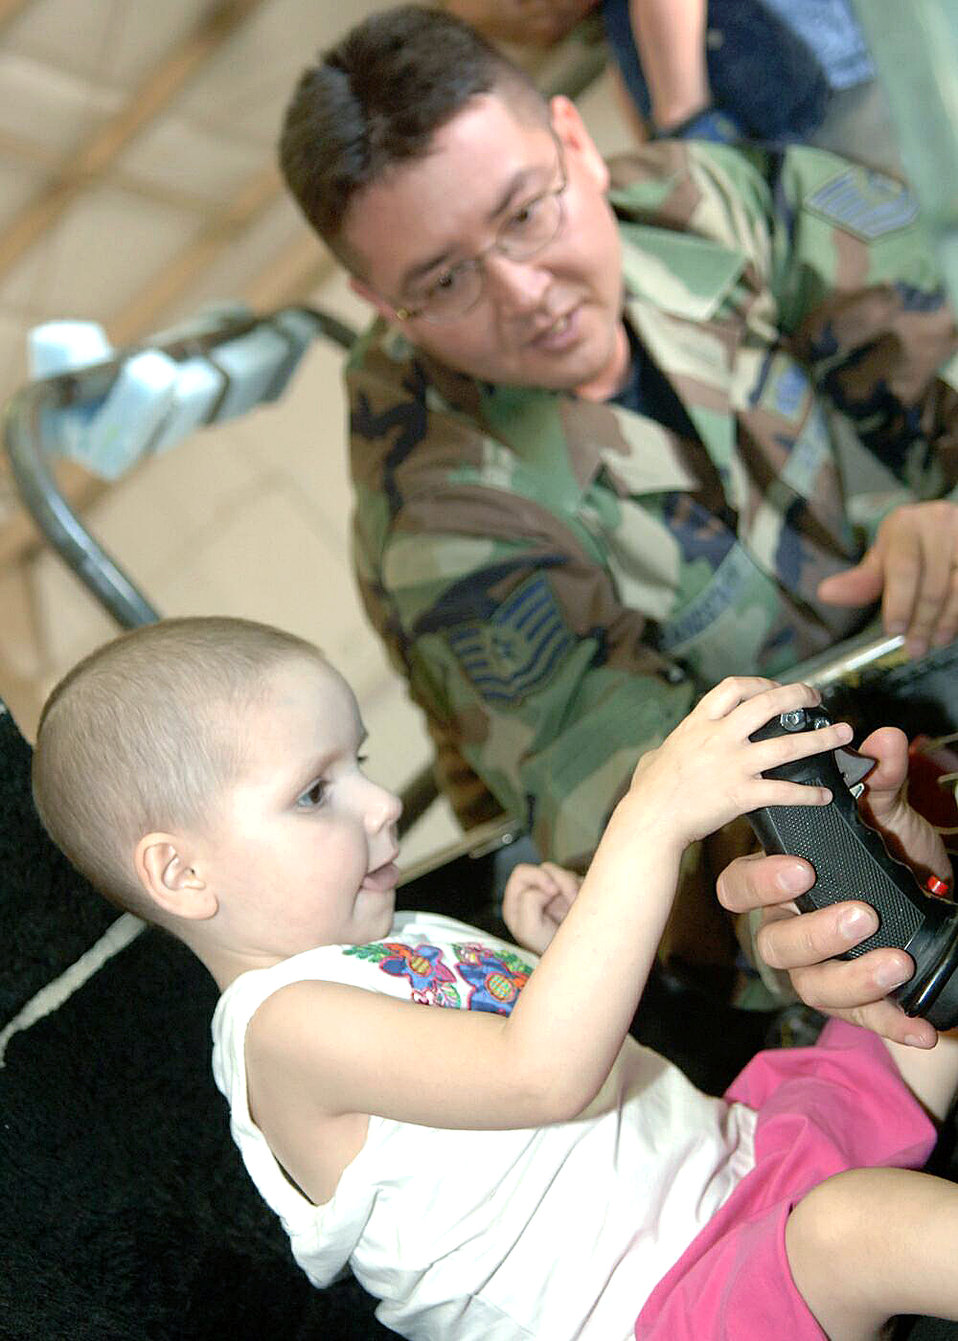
Make-A-Wish

Tech. Sgt. Thomas Grandstaff shows 3-year-old Hannah Holguin the inside of the cockpit of an A-10 Thunderbolt II during a tour of Davis-Monthan Air Force Base, Ariz., on July 17. The Make-A-Wish Foundation teamed with Davis-Monthan to offer a tour of the base for Hannah and other Make-A-Wish children as well as their families. The tour consisted of demonstrations by an explosive ordnance disposal robot, base fire department and a weapons load crew for an A-10. Hannah is the daughter of Mark and Amy Holguin. Sergeant Grandstaff is with the 355th Maintenance Group.